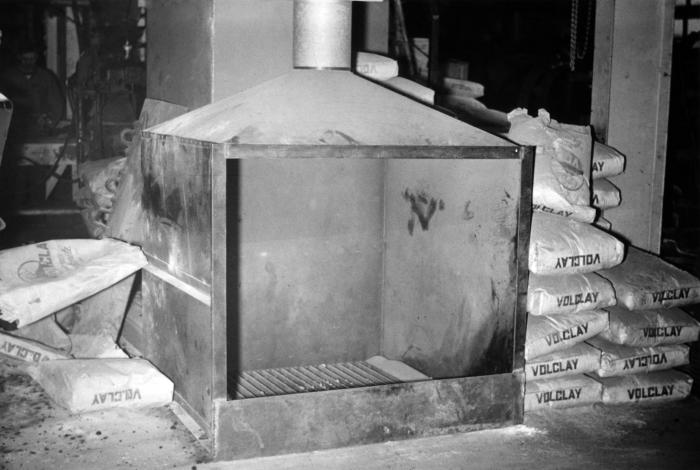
This historical photograph was provided by the Center for Disease Control's (CDC), National Institute for Occupational Safety and Health (NIOSH). The image showed a sand-mulling apparatus. The mulling process involves mixing sand, clay, and water, an subsequently spreading and flatteneing the mixture under high pressure. Workers could be exposed to dust during the process, which is why it is a potential respiratory health hazard, justifying the use of a filtered breathing apparatus.